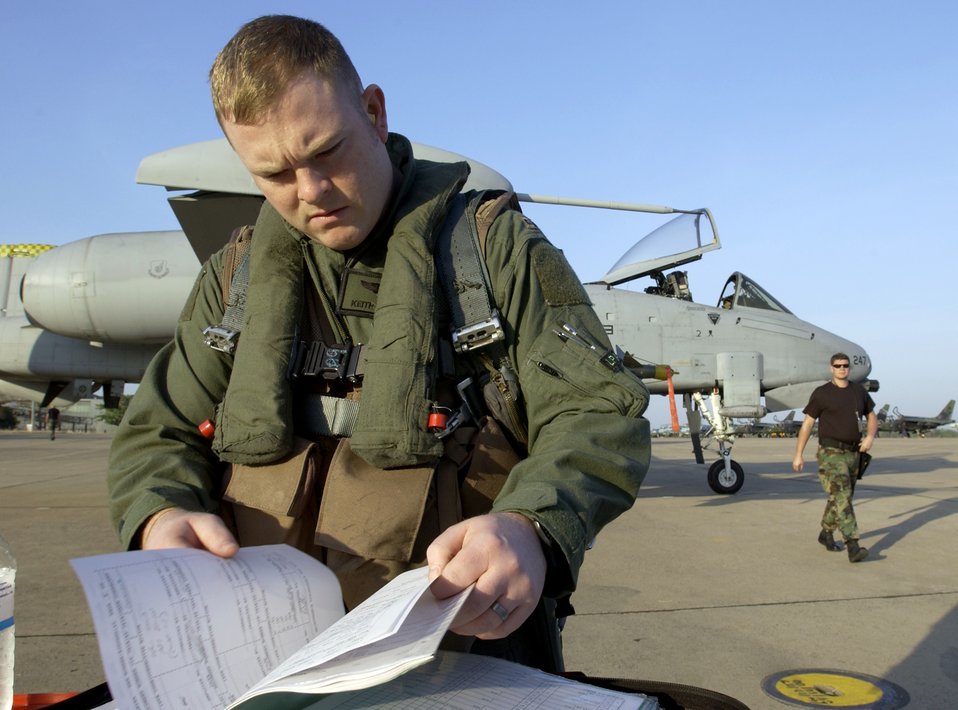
Cope Tiger '06

KORAT ROYAL AIR FORCE BASE, Thailand (AFPN) -- First Lt. Keith Bonser checks maintenance forms before an exercise Cope Tiger '06 mission here Feb. 8. Lieutenant Bonser is an A-10 Thunderbolt II pilot from the 25th Fighter Squadron at Osan Air Base, South Korea.